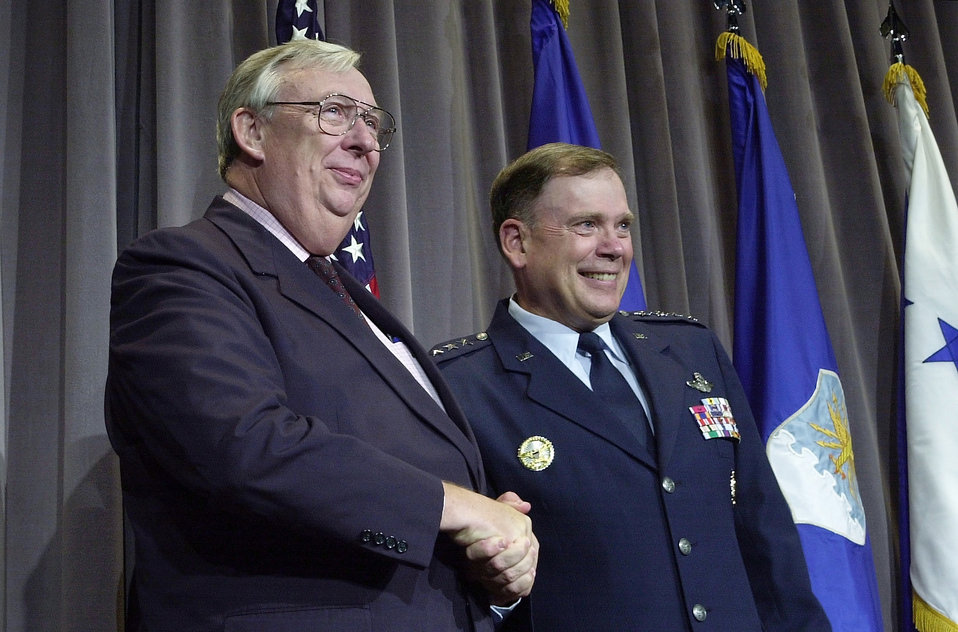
Roche and Jumper

WASHINGTON -- After administering the oath of appointment Chief of Staff of the Air Force Gen. John P. Jumper and co-host Secretary of the Air Force Dr. James G. Roche applaud the 54 reenlistees, ranging in ranks from senior airman to chief master sergeant, who gathered, on Sept. 17, 2001, in the Pentagon auditorium for a special reenlistment ceremony in honor of the Air Force's 54th anniversary.